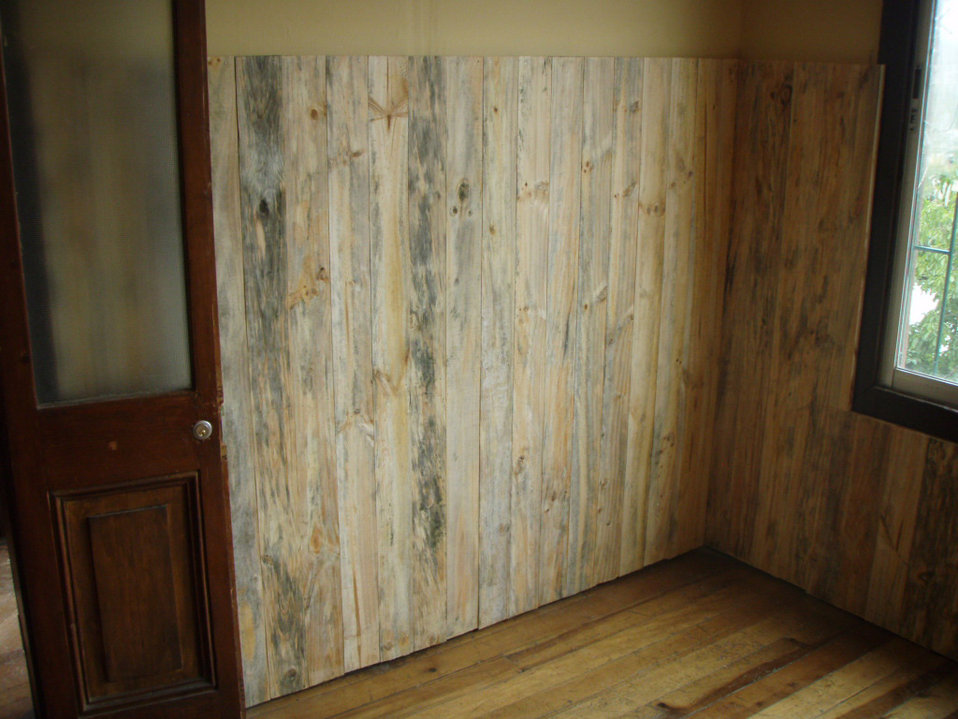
Red Horse Airmen renovate Chilean school's library

Wooden slats hang on the walls of a newly renovated library at a Chilean culinary and hotel service high school in Quilpae, Chile on Oct. 31. The renovations to the library was performed by two Rapid Engineer Deployable Heavy Operational Repair Squadron Engineer, or RED HORSE Airmen, and their Chilean civilian counterparts and took four days to complete; three days ahead of schedule. The renovation is the result of Operation Southern Partner – a two-week Twelfth Air Force (Air Forces Southern) led event aimed at providing intensive, periodic subject matter exchanges with partner nations in the U.S. Southern Command area of focus.